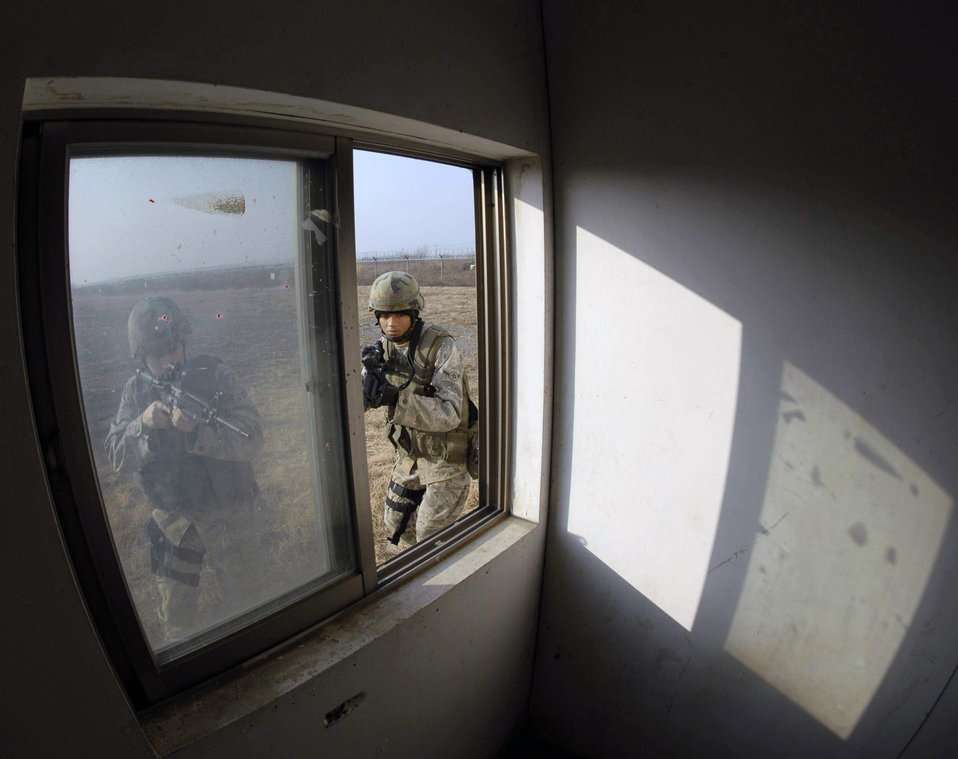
Osan Airmen train to fight

Airmen of the 51st Security Forces Squadron train on how to operate and survive in a war environment during the base's combat readiness course Jan. 22 at Osan Air Base, South Korea.